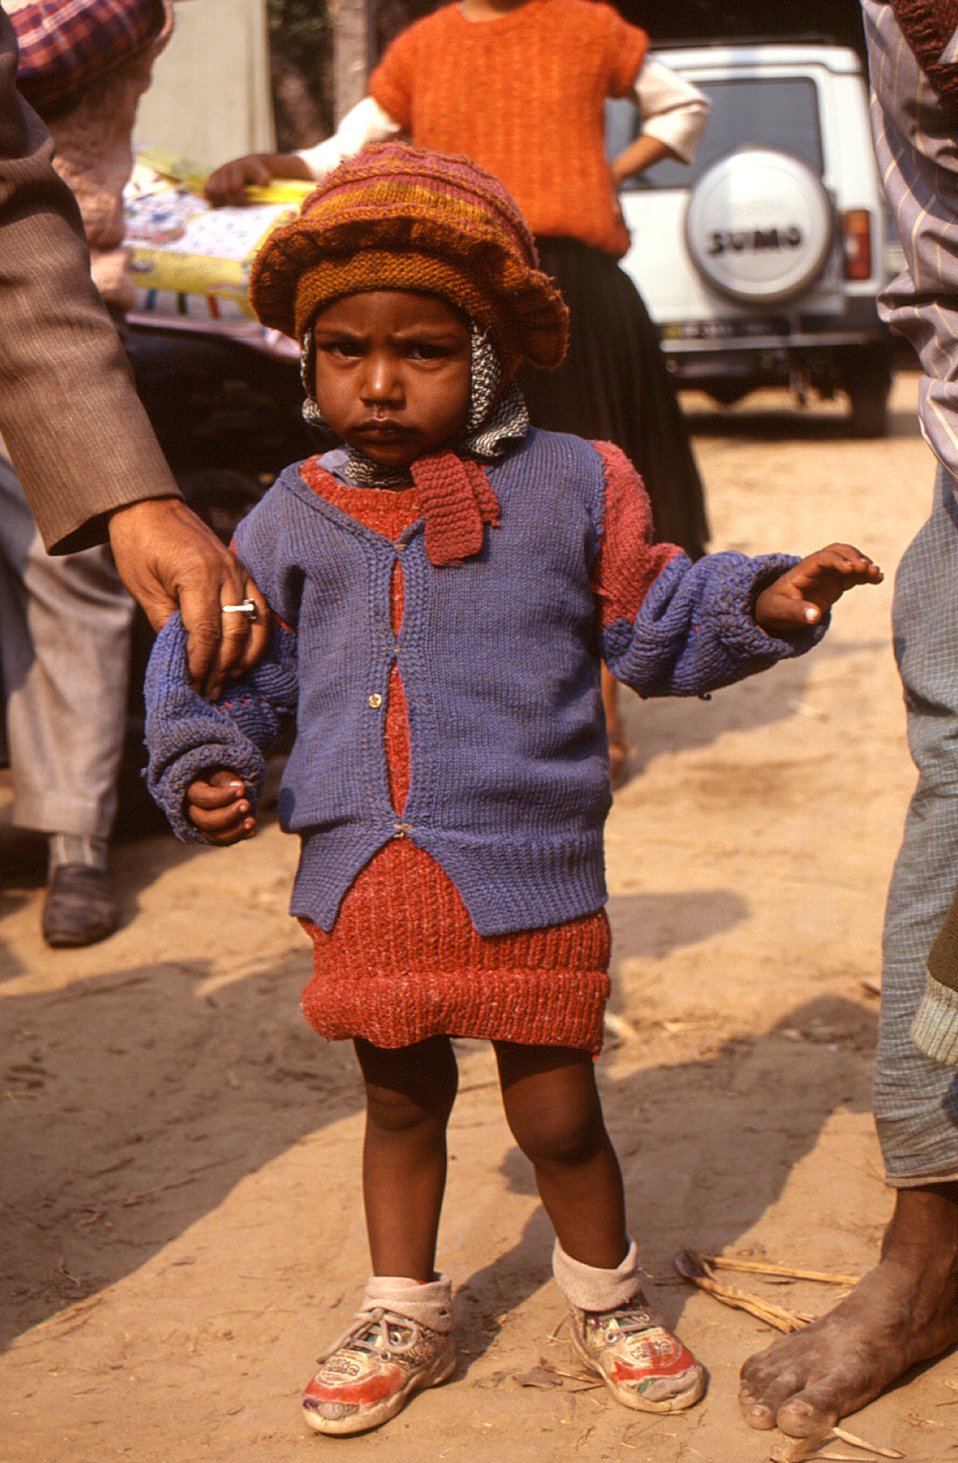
The young child pictured here in this 2000 photograph was a suspected polio victim who was thought to be suffering with acute flaccid paralysis (AFP). The image was captured while health care practitioners were making a follow-up visit to her home rural village. Since its inception in the fall of 1998, the STOP Transmission of Polio (STOP) immunization initiative teams have worked in over 50 countries. In the first years of the program, most STOP team members worked primarily to bolster AFP surveillance, support 'national immunization' days, and conduct polio case investigation and follow-up.The image was provided by Chris Zahniser, B.S.N., R.N., M.P.H., a STOP Transmission of Polio (STOP) immunization initiative team member and photographer. Ms. Zahniser was at the time assigned to the state of Uttar Pradesh in northern India, and spent three months working in the Districts of Gorakhpur and Deoria.